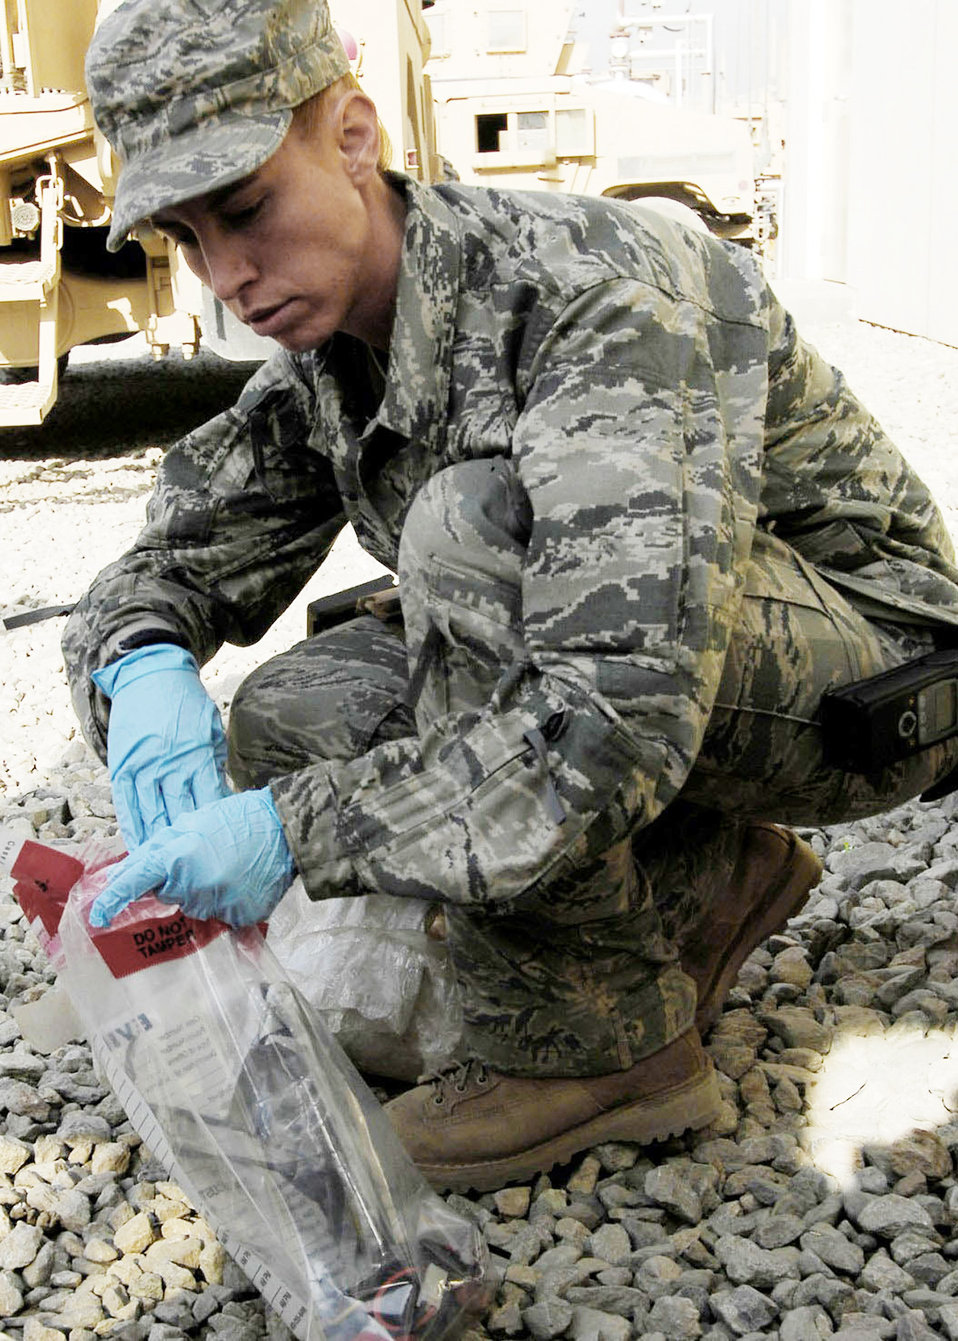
The weapons of warfare adapt with the age of Airmen

Staff Sgt. Elizabeth Spradley, an explosive ordnance disposal technician at Bagram Airfield, Afghanistan, collects evidence from a mock improvised explosive device during training Oct. 26, 2009. EOD teams use robots during missions to disarm IEDs and look for additional IEDs while ensuring coalition maximum safety when dealing with IEDs. Sergeant Spradley is a joint expeditionary tasked Airman attached to the 741st EOD Battalion. She is an Albuquerque, N.M., native deployed from Spangdahlem Air Base, Germany.